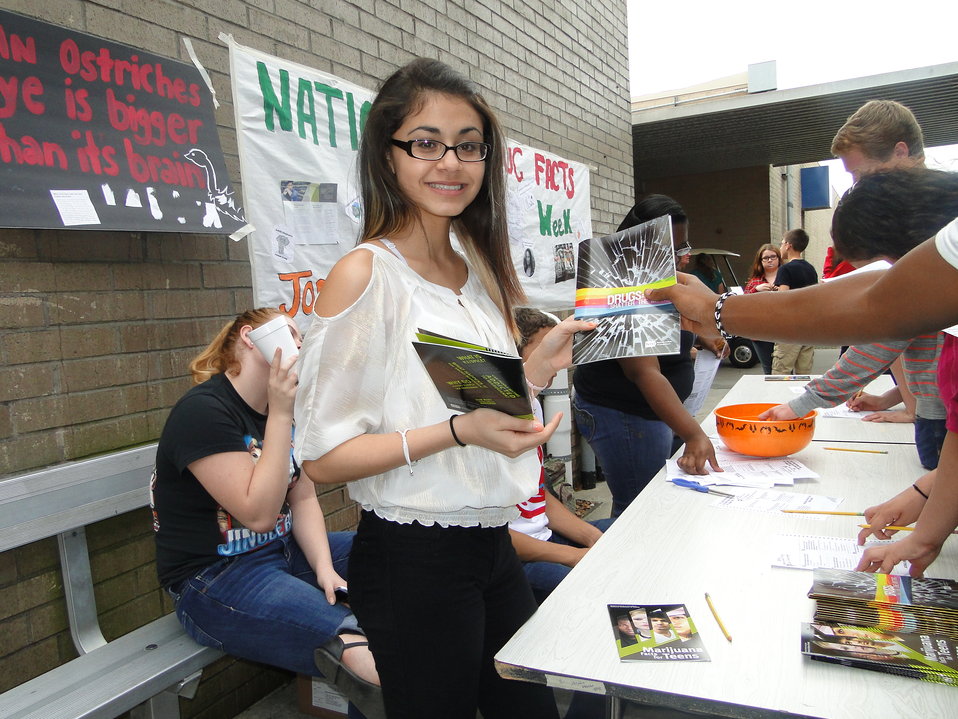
Sebring High School